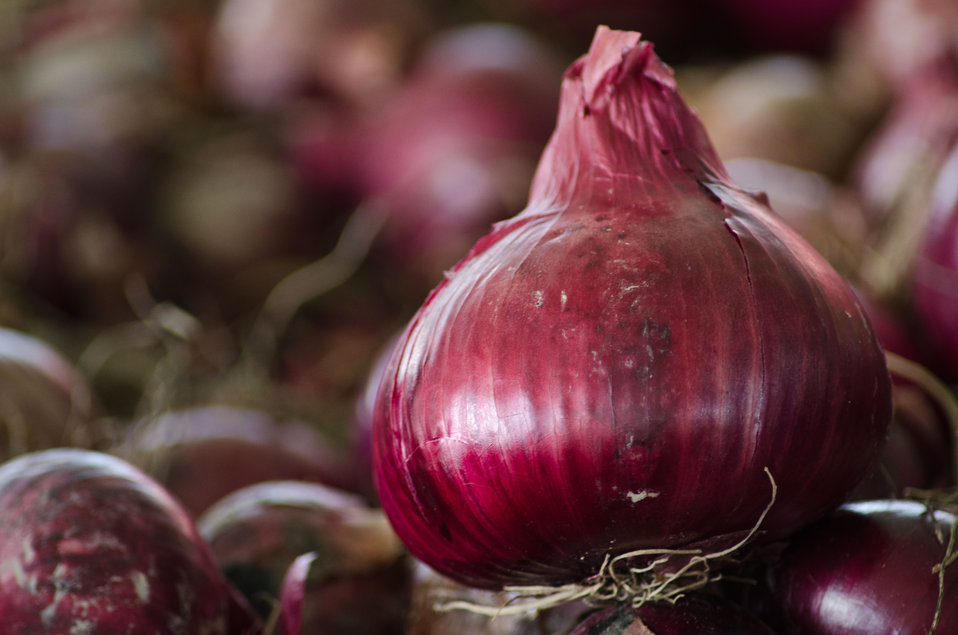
Red onions for sale at the Bath County Agricultural Education and Marketing Center, Owingsville, KY, on Friday, July 15, 2011. The Center was the recipient of a $400,000 Rural Business Enterprise Grant. It has given farmers and producers from Bath and surrounding counties the opportunity to manufacture and market their locally grown and locally produced value-added and “Kentucky Proud” branded products, including but not limited to, fresh produce, artisan crafts and specialty food products. The Center is open year-round and allow residents to sell products in four different retail categories, including Kentucky products, regional crafts, “green” groceries and bakery/deli. Several producers expressed their gratitude for Rural Development’s assistance in making the center a reality. The project was made possible through funding the American Recovery and Reinvestment Act of 2009 enacted by the 111th United States Congress in February 2009 and signed into law on February 17, 2009, by President Barack Obama.